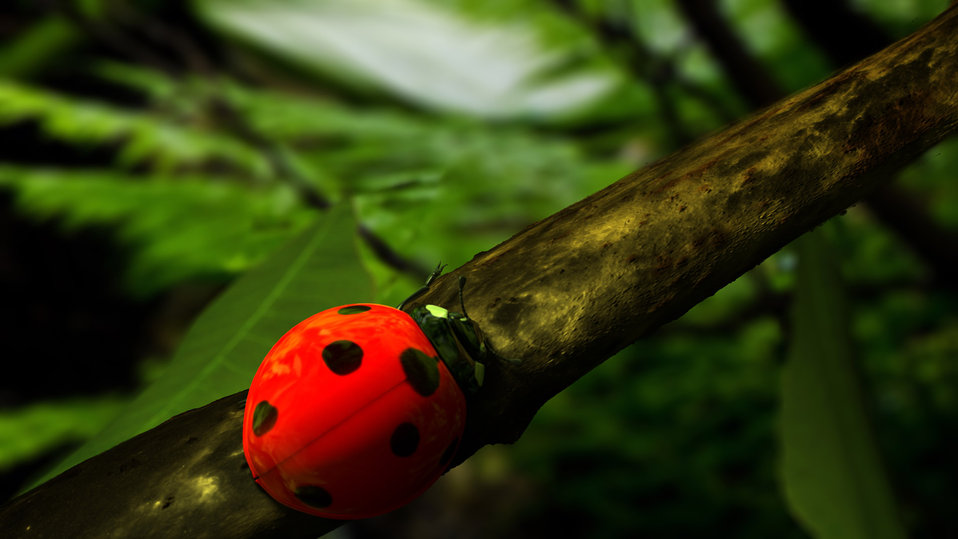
Ladybird on a branch of the tree.